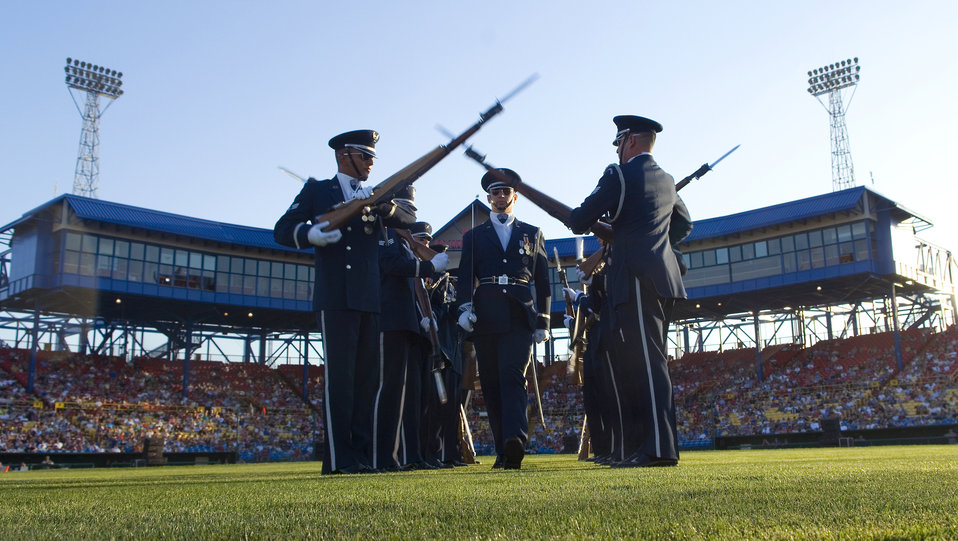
Air Force Week in the Heartland kicks off with a bang

The Air Force Honor Guard drill team performs for approximately 10,000 spectators during the opening ceremonies of Air Force Week in the Heartland Aug. 9 at Rosenblatt Stadium in Omaha, Neb. The week is designed to broaden awareness of the Air Force's role in the war on terrorism and strengthen support for Airmen serving worldwide in defense of freedom.